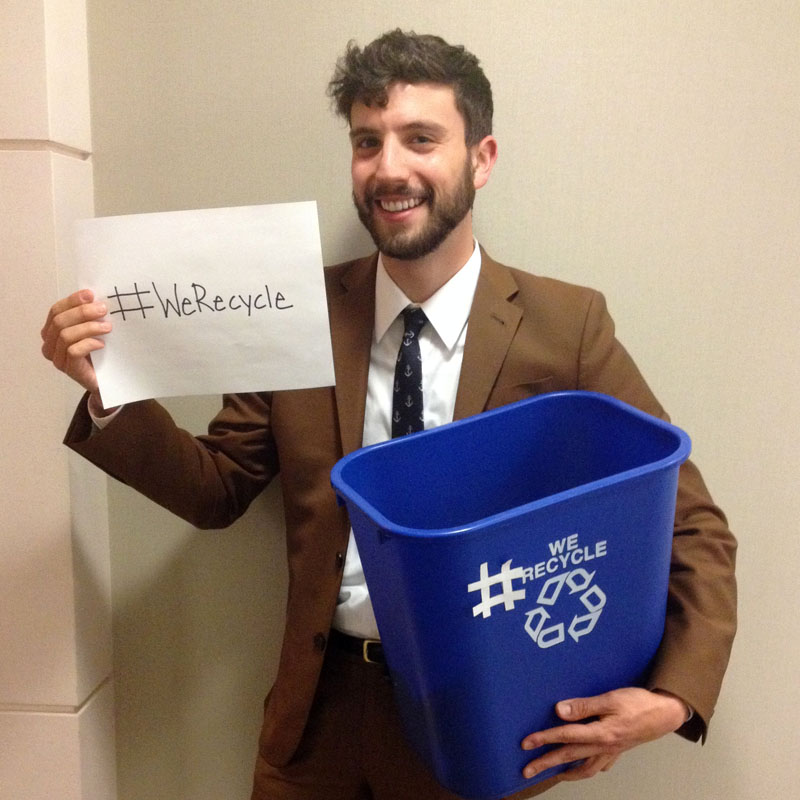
EPA Employee Noah Recycles

At EPA, #WeRecycle. Learn how you can too: www2.epa.gov/recycle